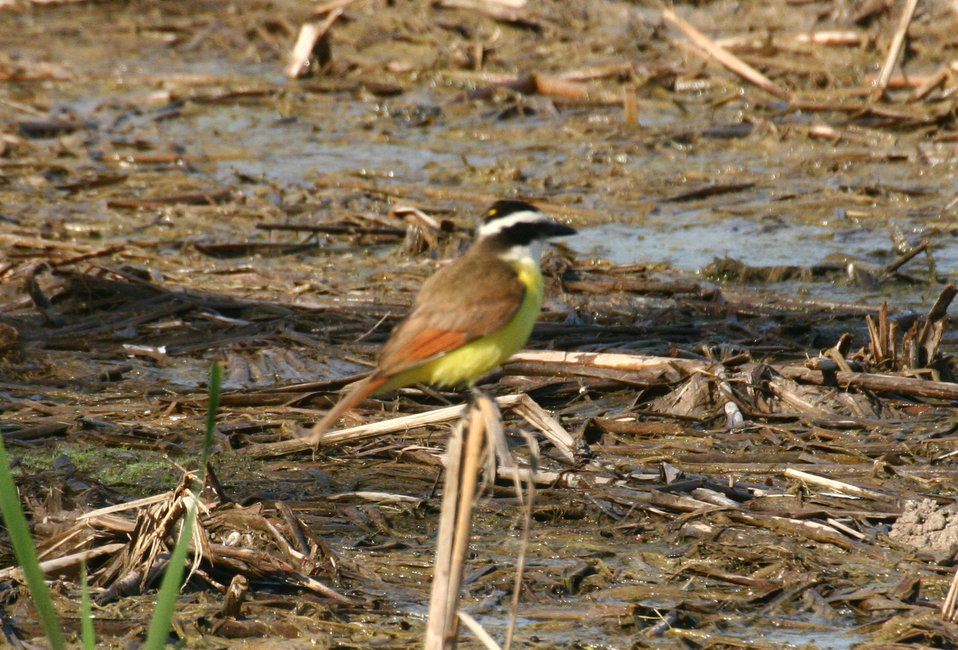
Great Kiskadee at Santa Ana NWR

These common, vocal birds are usually easy to find by call or sight at Santa Ana, often near one of the refuge wetlands.